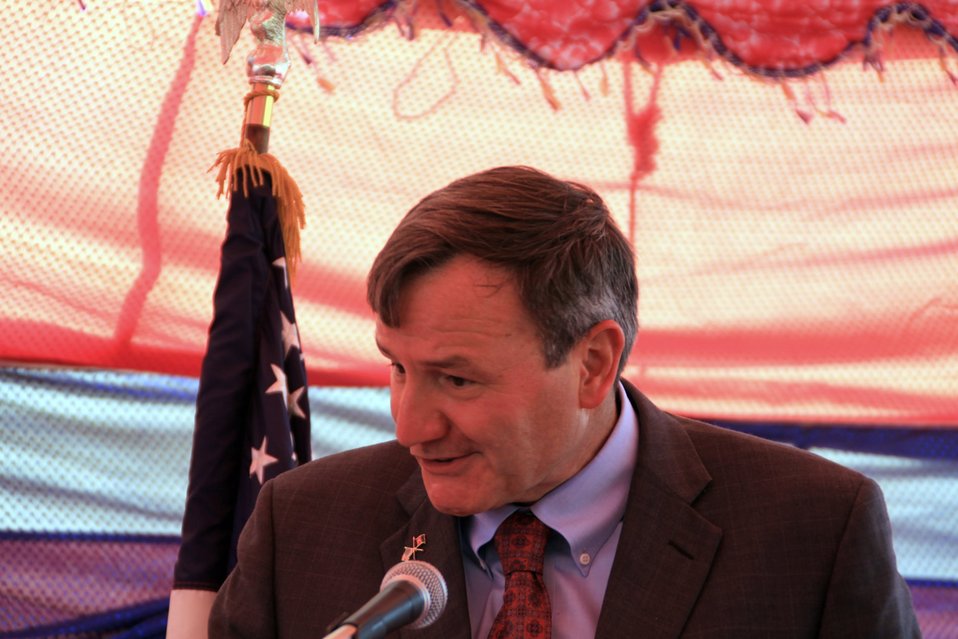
Badam Bagh Farm